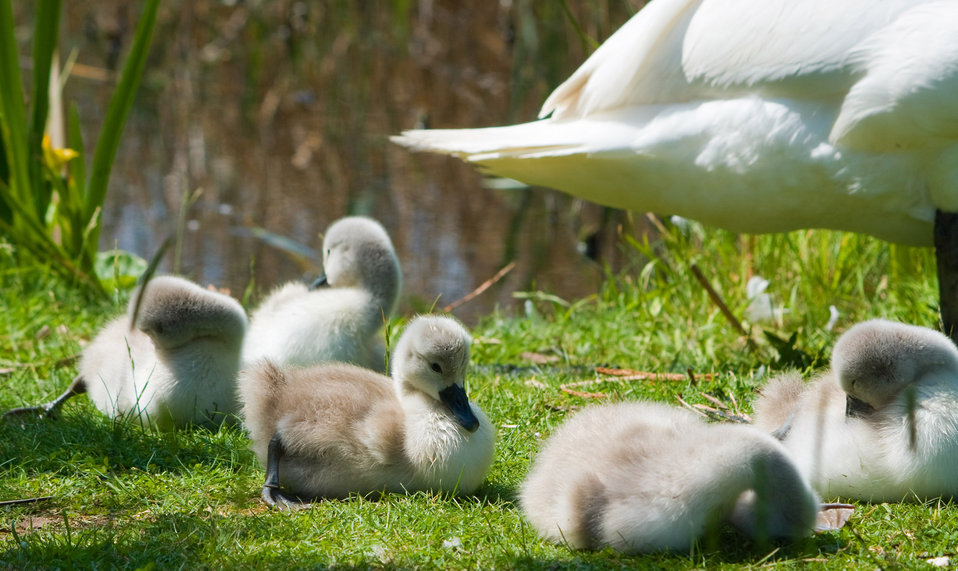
Cygnets and swan

Baby cygnets with their swan mother on the grass.